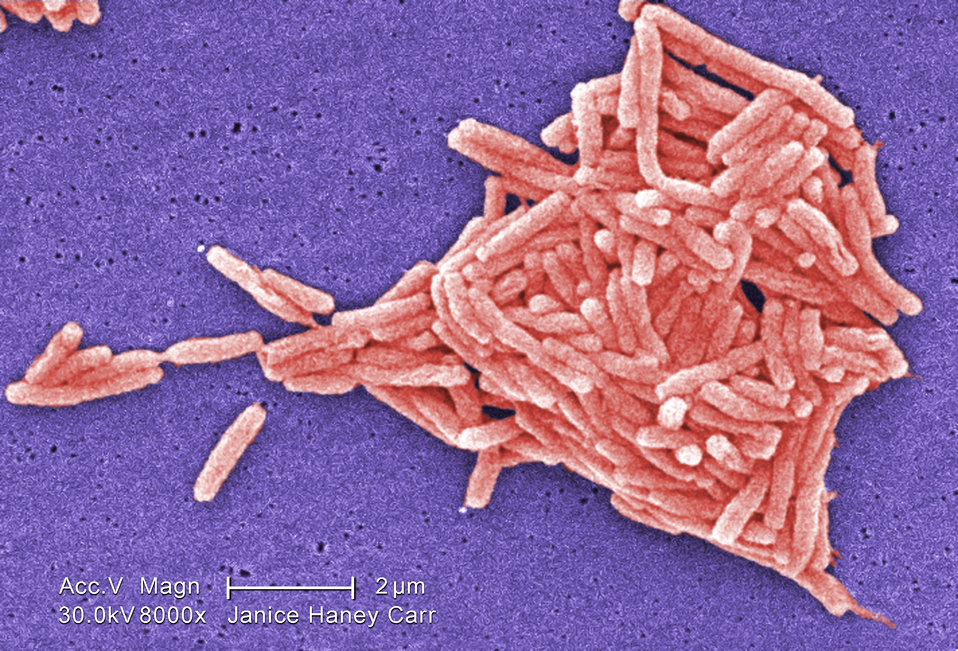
Magnified 8000X, this colorized scanning electron micrograph (SEM) depicted a grouping of Gram-negative Legionella pneumophila bacteria. Please see PHIL 11092 through 11152 for additional SEMs of these organisms, specifically PHIL 11127 for a black and white version of this image. It appears that a few are still joined to one another just prior to the completion of their reproductive process known as cell division. In some of these views you'll note the presence of flagellar appendages.